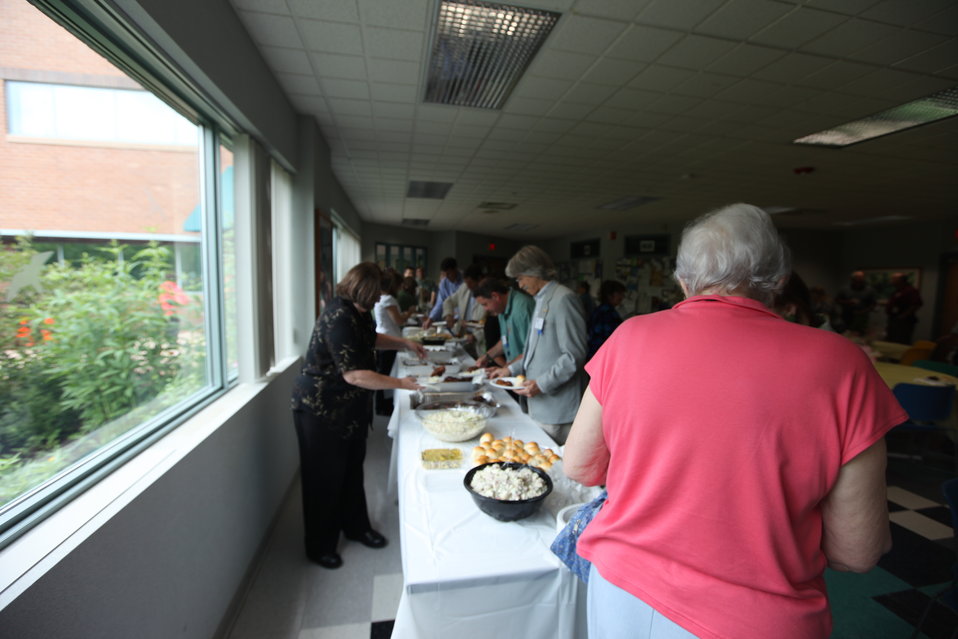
Northeast Region Employee Appreciation Awards

Luncheon